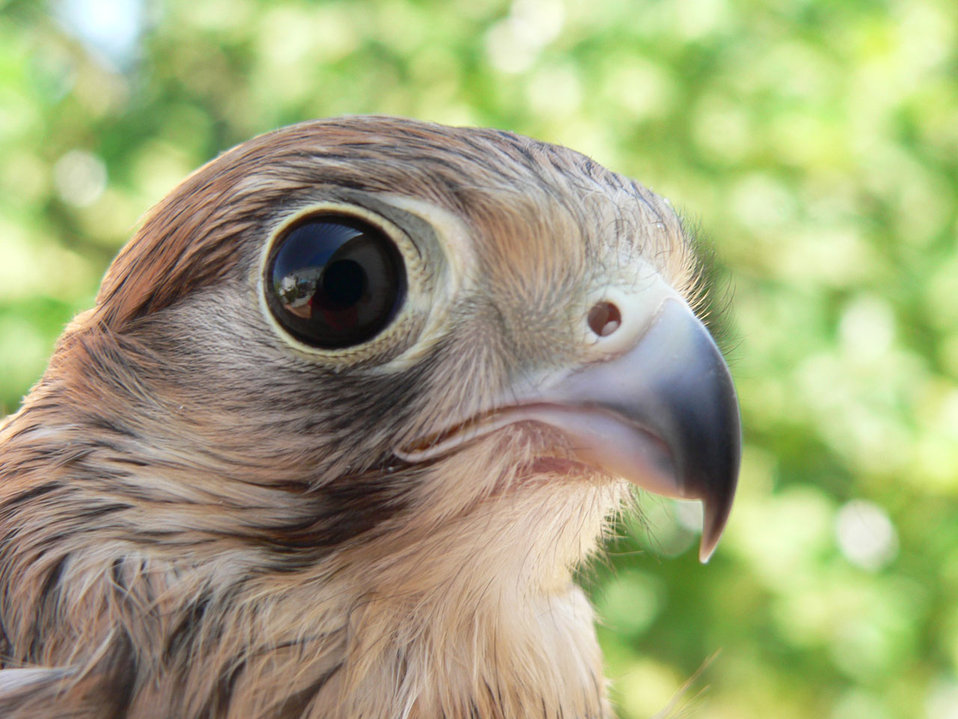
Fixation

The lesser kestrel (falco naumanni).